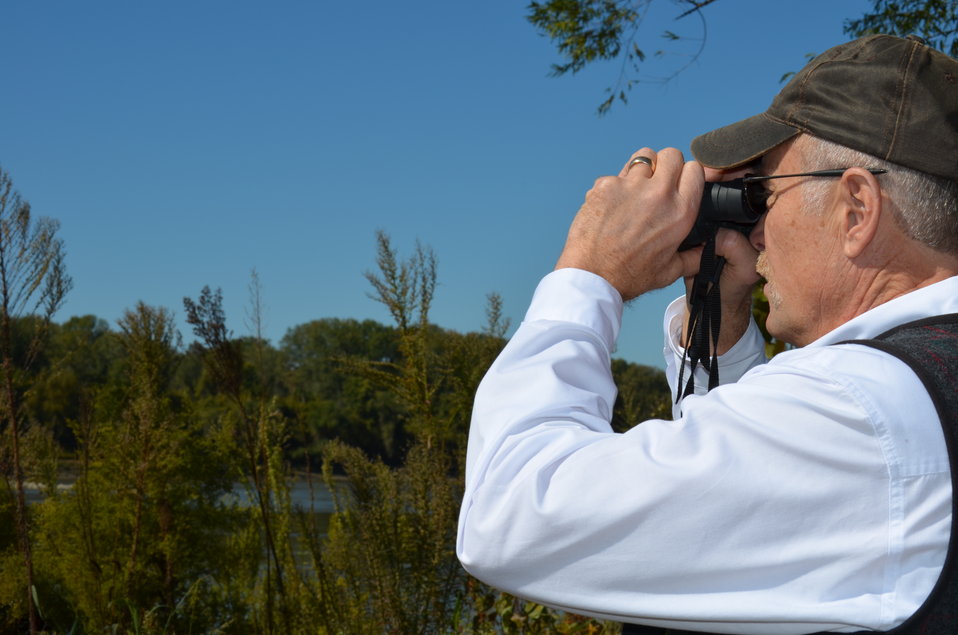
Zooming in

Tom Draper, Deputy Director of Missouri Department of Conservation viewing confluence. USFWS/Ashley Spratt